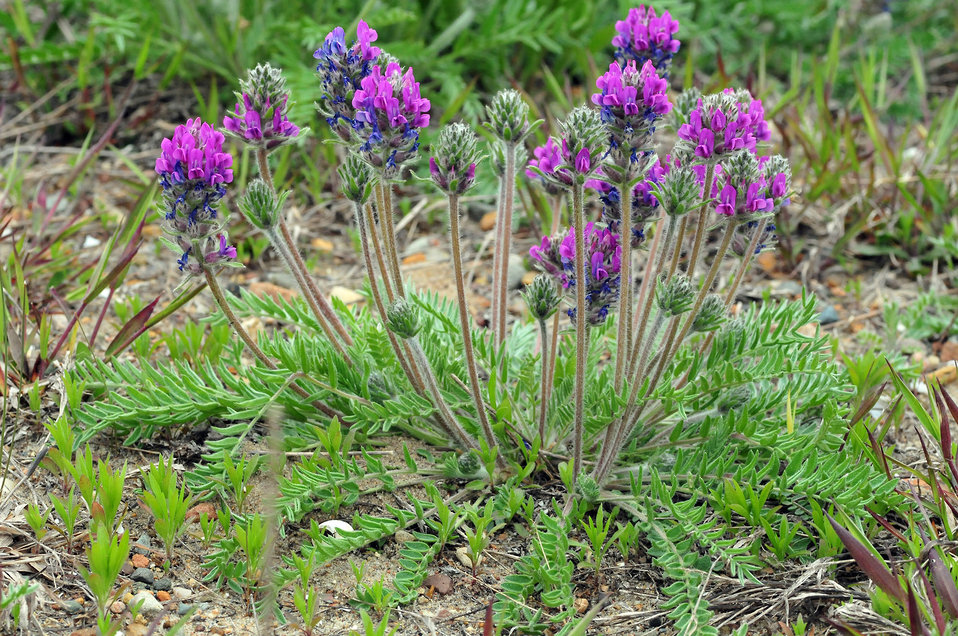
Fassett's Locoweed plant by USFWS Joel Trick

Fassett's locoweed is a federally threatened plant found only in Wisconsin. It grows on the shorelines of lakes with fluctuating water levels. Photo by USFWS; Joel Trick